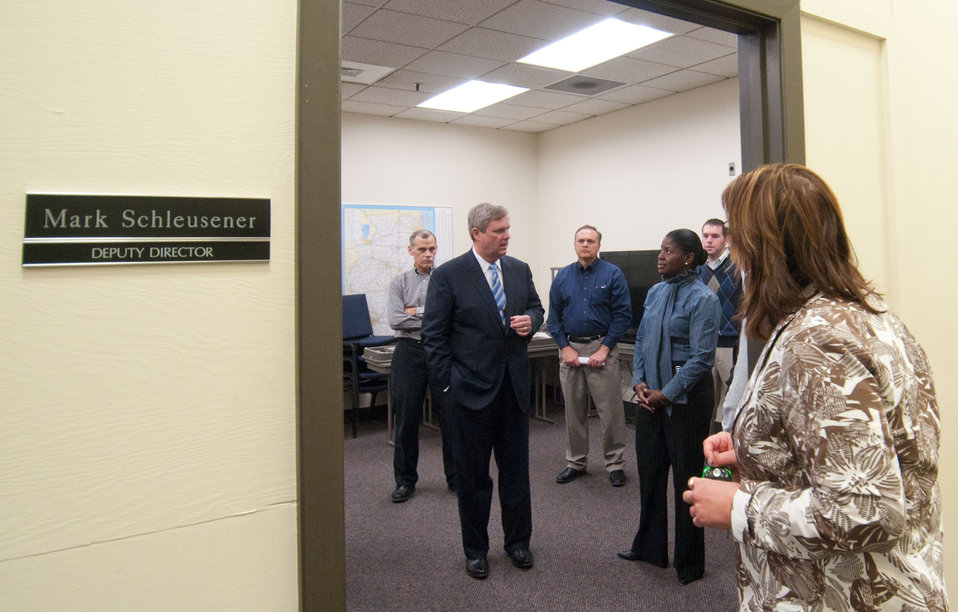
U.S. Department of Agriculture (USDA) Secretary Tom Vilsack (second from left) visited the employees of the National Agricultural Statistics Service in Springfield, IL, to talk about current and future cutbacks across the department, on Wednesday, November 2, 2011. Secretary Vilsack recognized efforts people have made throughout the department and that it is important that USDA employees continue to develop ways to do more with less. He then provided an open question and answer session for the employees.